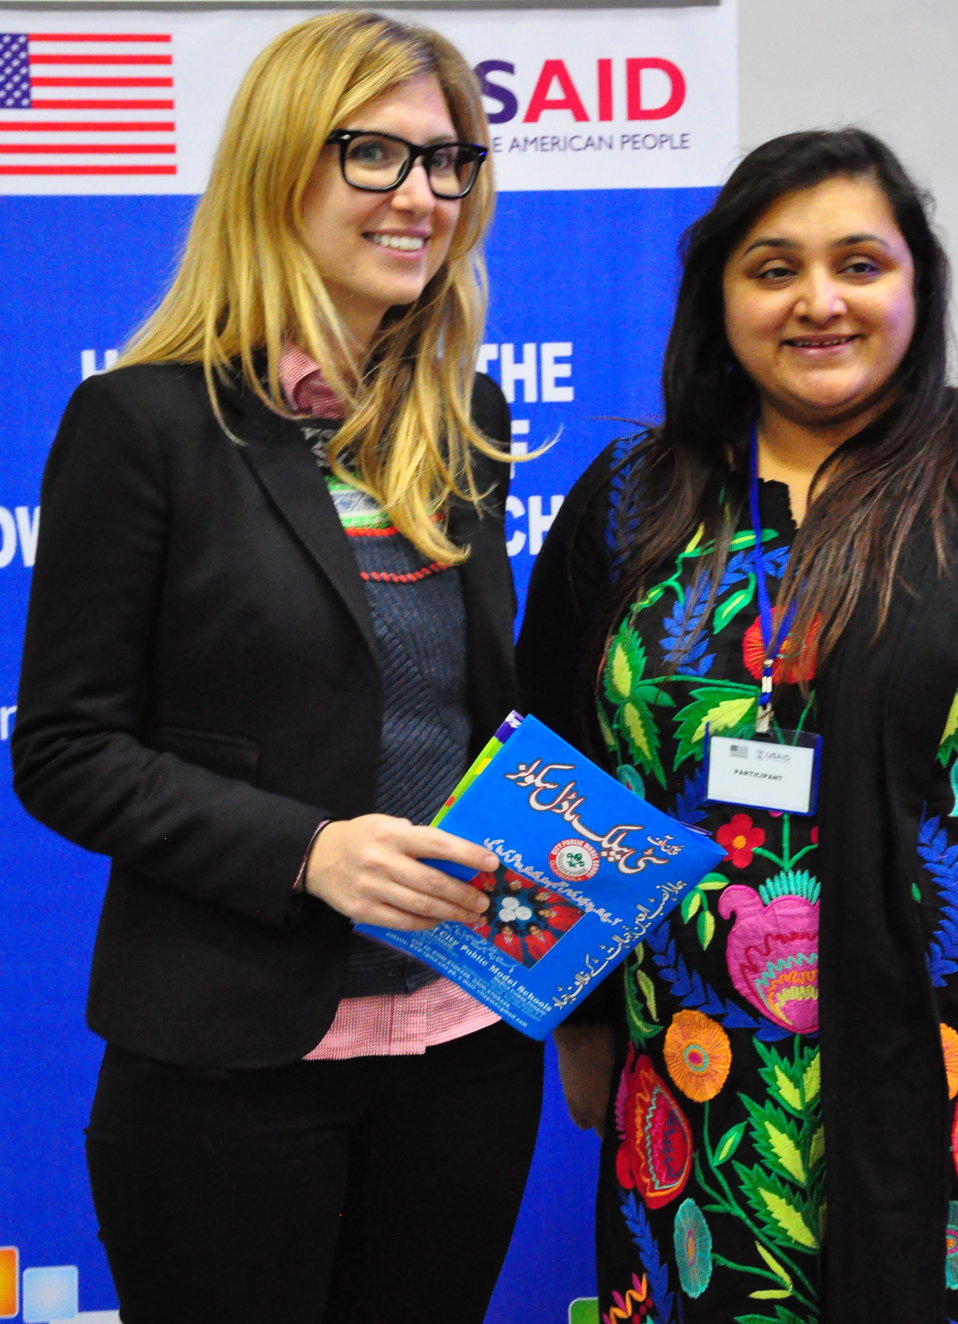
Delegate Marie Leznicki with a conference participant